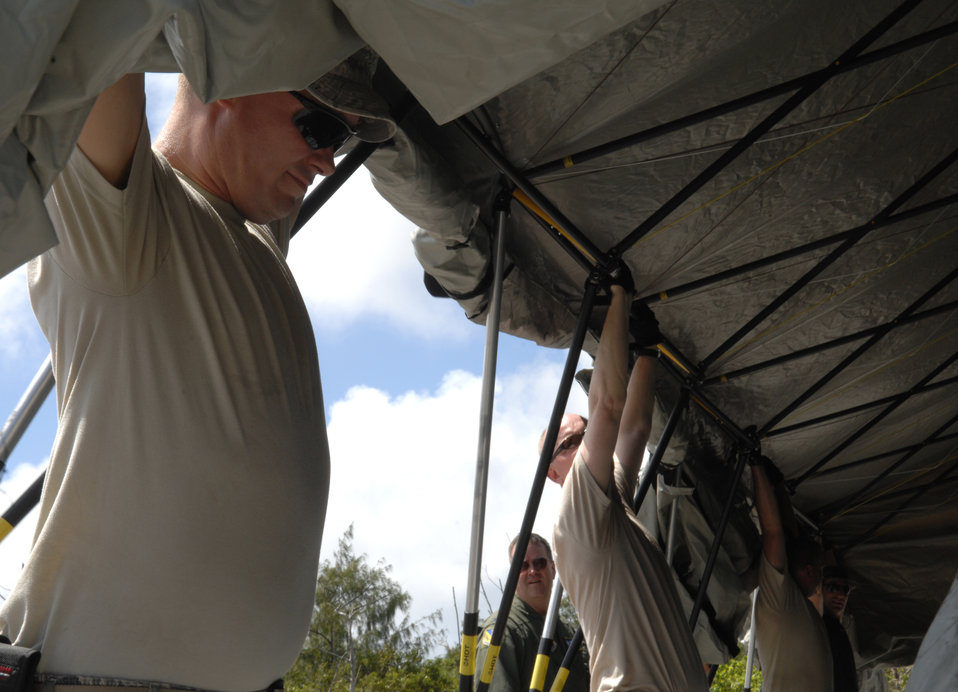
Andersen and Yokota Airmen train for disaster relief operations

Members of the 36th Contingency Response Group at Andersen Air Force Base, Guam, and aircrews from the 374th Operations Group from Yokota Air Base, Japan, construct a shelter Feb. 17, 2010, at Northwest Field, Guam. The two units participated in a mock deployment to Northwest Field to rehearse time-critical actions for disaster relief operations.